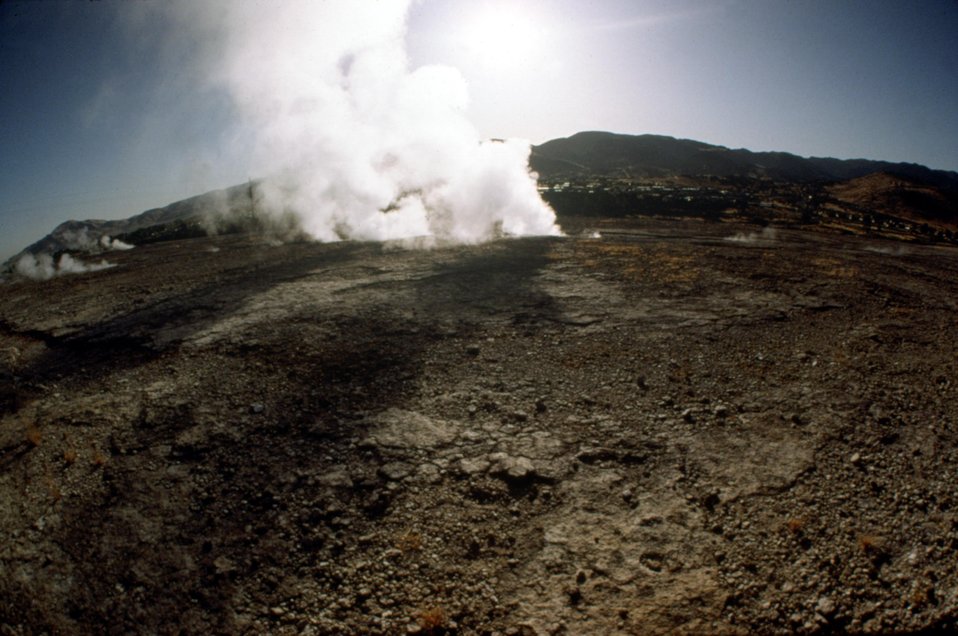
HOT SPRINGS LOCATED IN THE STEAMBOAT SPRINGS AREA IN NEVADA.

THE STEAMBOAT HILLS GEOTHERMAL POWER PLANT IS LOCATED IN THE STEAMBOAT SPRINGS, NEVADA AREA.